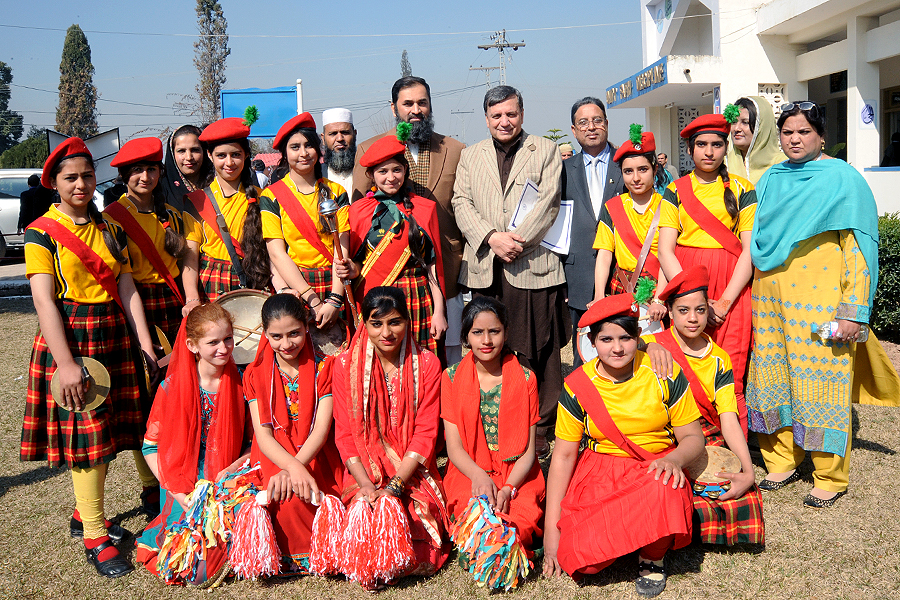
United States and Pakistan Launch the Pakistan Reading Project